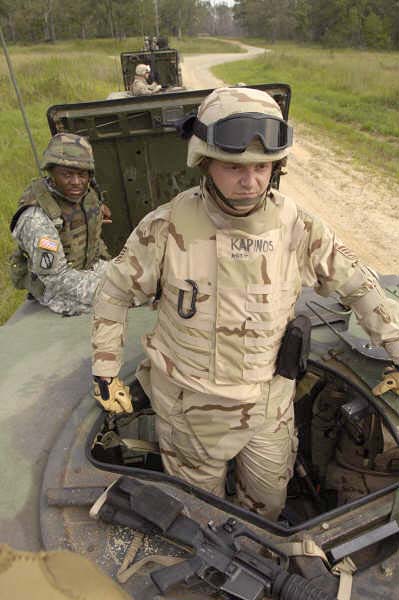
Skills training

Tech. Sgt Joseph Kapinos surveys the live fire range with training adviser Staff Sgt. Kevin Matthews before a mounted combat patrol exercise at Camp Shelby, Miss., Aug. 21. Sergeant Kapinos is from Grand Forks Air Force Base, N.D., and among 100 Airmen participating in the 39-day combat skills training course.